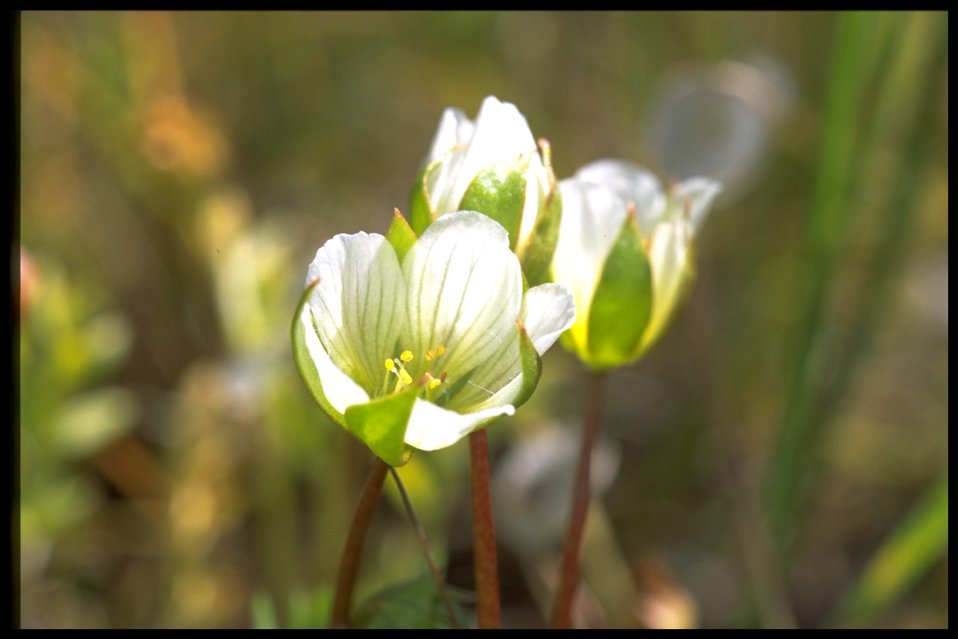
Closeup shot of wildflower (genus Limnanthes).